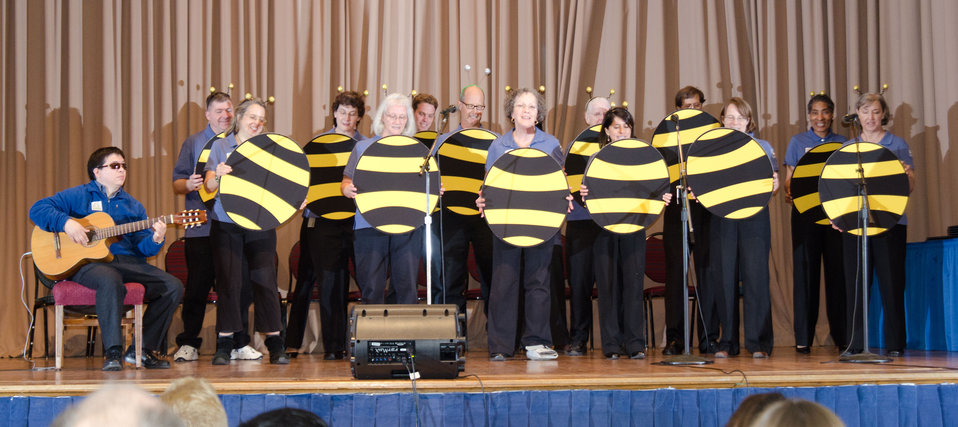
Graduation day of the 2011 U.S. Department of Agriculture (USDA) Executive Master Gardeners, on Tuesday, November 8, 2011 in Washington, DC. During the past six-weeks, students contributed 40-hours of volunteer time, completed studies and testing to receive their certificates today as an Executive Master Gardener. Many of the sessions occurred before work hours, during lunchtime or at community garden project sites such as Powell Middle School. USDA challenges its employees to establish People's Gardens at USDA facilities worldwide or in community gardens. People's Gardens vary in size and type, but all have a common purpose - to help the community and the environment. To learn about the People’s Garden Initiative visit www.usda.gov/wps/portal/usda/usdahome?contentid=peoples g....